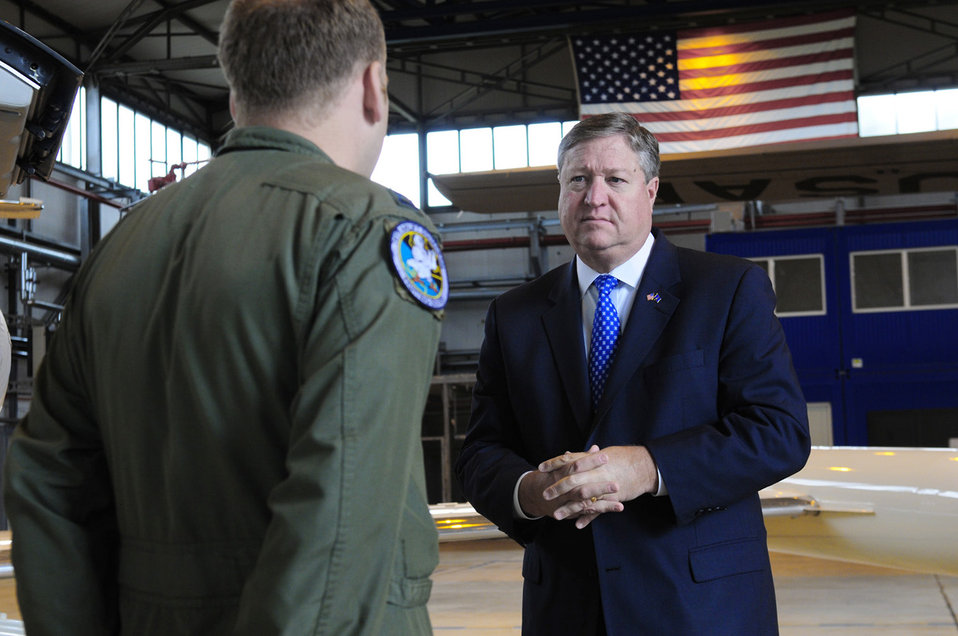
SecAF at Ramstein

Capt. Daniel Helland briefs Secretary of the Air Force Michael Donley June 18, 2011, on C-21A aircraft aeromedical evacuation operations at Ramstein Air Base, Germany. The secretary traveled to Europe to meet with Airmen and receive updates from command leaders on U.S. Air Forces in Europe efforts to build partnership capacity and ongoing contingency support for Operation Unified Protector. Captain Helland is assigned to the 76th Airlift Squadron.